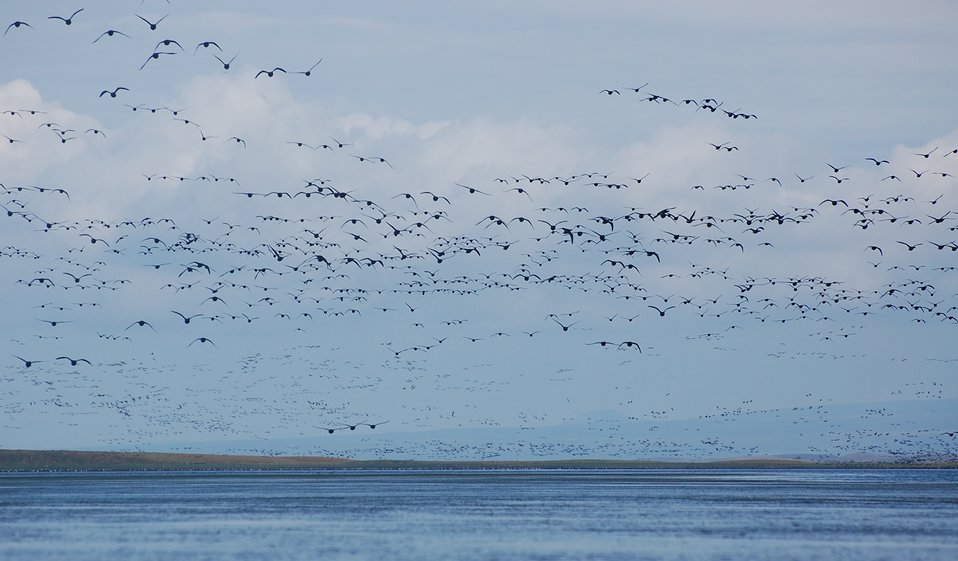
Brant at Izembek Lagoon, Izembek National Wildlife Refuge